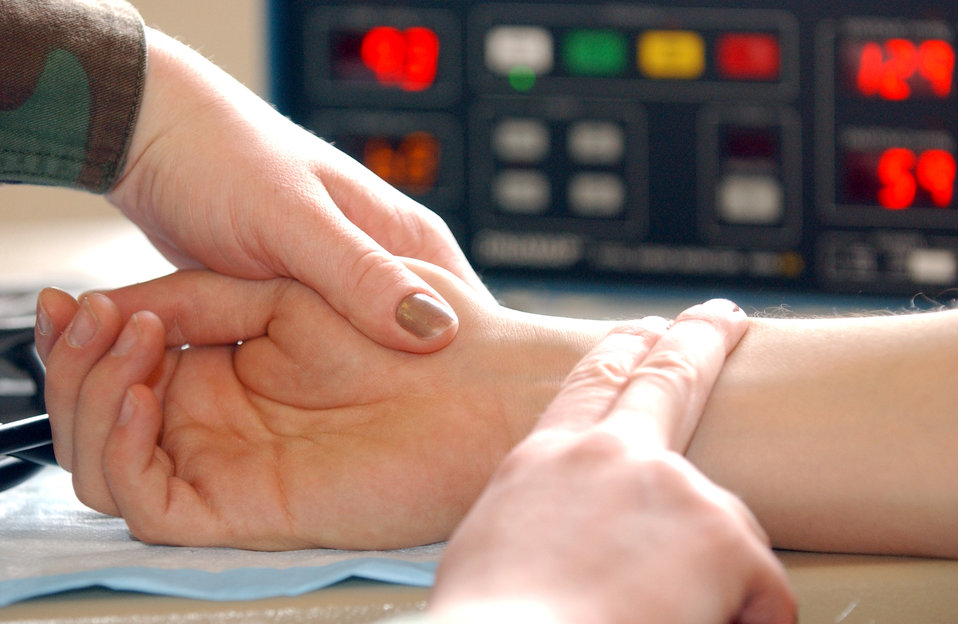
Feeling the pressure

ROYAL AIR FORCE MILDENHALL, England -- Airman 1st Class Stephanie Ambler checks the pulse of Capt. Derek Ferland to verify the accuracy on the automatic blood pressure machine during a blood drive here April 13. Airman Ambler is with the 48th Medical Support Squadron and Captain Ferland is with the 100th Civil Engineer Squadron.